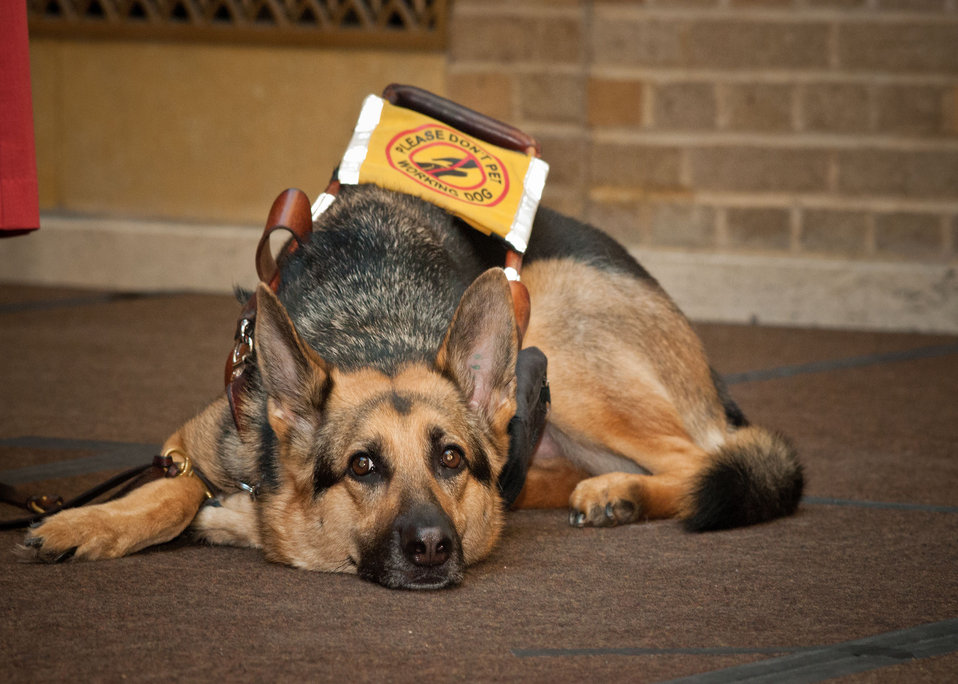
U.S. Department of Agriculture (USDA) Natural Resources Conservation Service Legislative Affairs Division Legislative Affairs Specialist Denise Decker’s guide dog “Wander” waits patiently while Decker addresses employees and guests at USDA’s Departmental Management (DM) Target Center 20th Anniversary at USDA in Washington, D.C. on Thursday, Sept. 13, 2012. The USDA Target Center has provides Assistive Technology to employees with disabilities. The Center has assisted thousands of individuals with disabilities to further contribute to the mission of USDA. The Target Center has also partnered with the Department of Defense Computer/Electronic Accommodations Program (CAP).